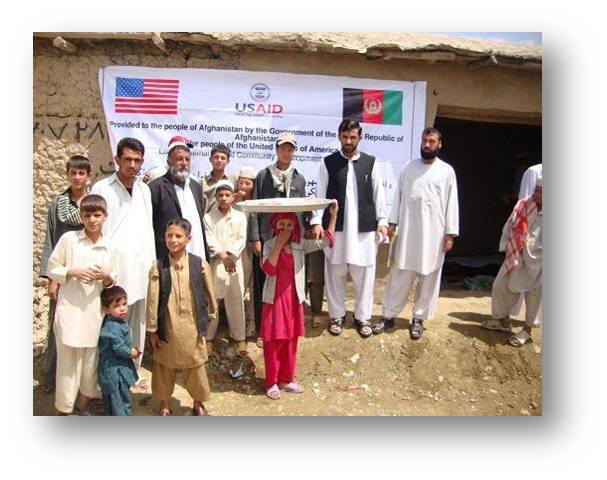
Bakery Raises Dough, Extra Time for Residents of Gujerekhil